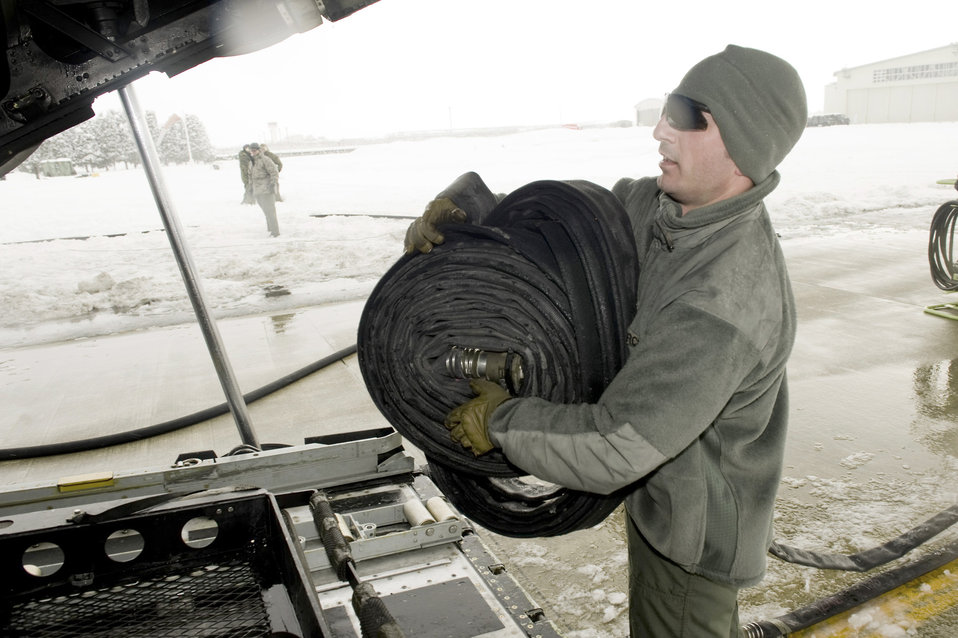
Forward area refueling point

Tech. Sgt. Paul Hammer runs a fuel line to an MC-130P Combat Shadow March17, 2011, at Yamagata Airport, Japan. Sergeant Hammer is assigned to the 353rd Special Operations Group.